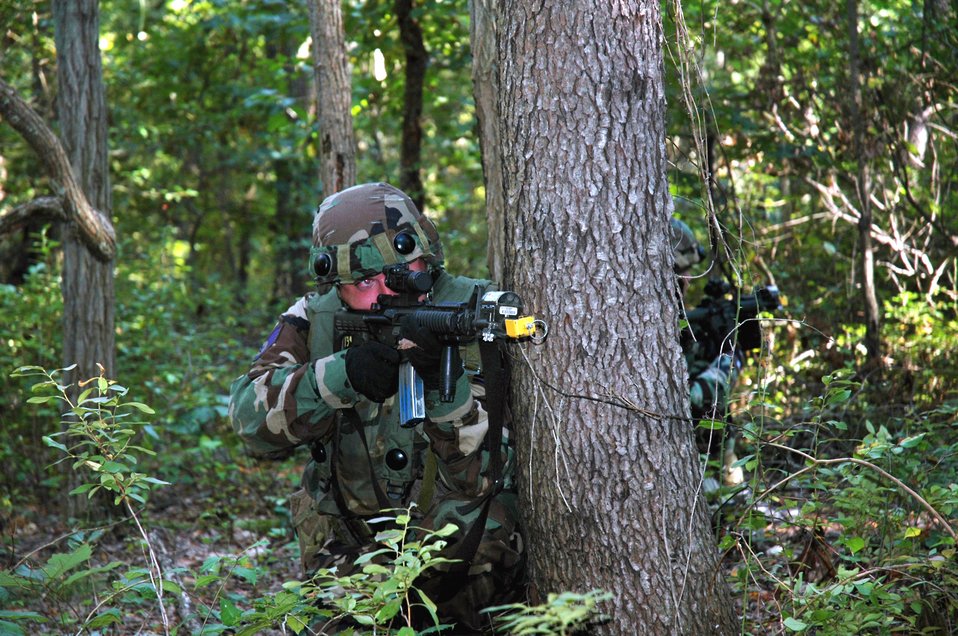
Contingency training sharpens combat skills

Staff Sgt. Gregory Hasecuster and other students in the Air Mobility Warfare Center's Advanced Contingency Skills Training Course 06-5 at Fort Dix, N.J., practice combat patrolling during a training session at a tactical range there Sept. 18. More than 60 Airmen are participating in the training course, learning numerous combat-related skills including tactics, media skills, convoy operations, first aid, and field craft. The course is taught by the AMWC's 421st Combat Training Squadron.